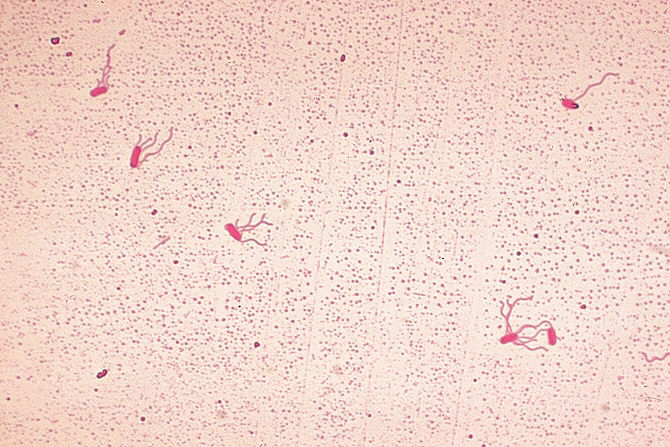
Alcaligenes faecalis. Flagella stain.